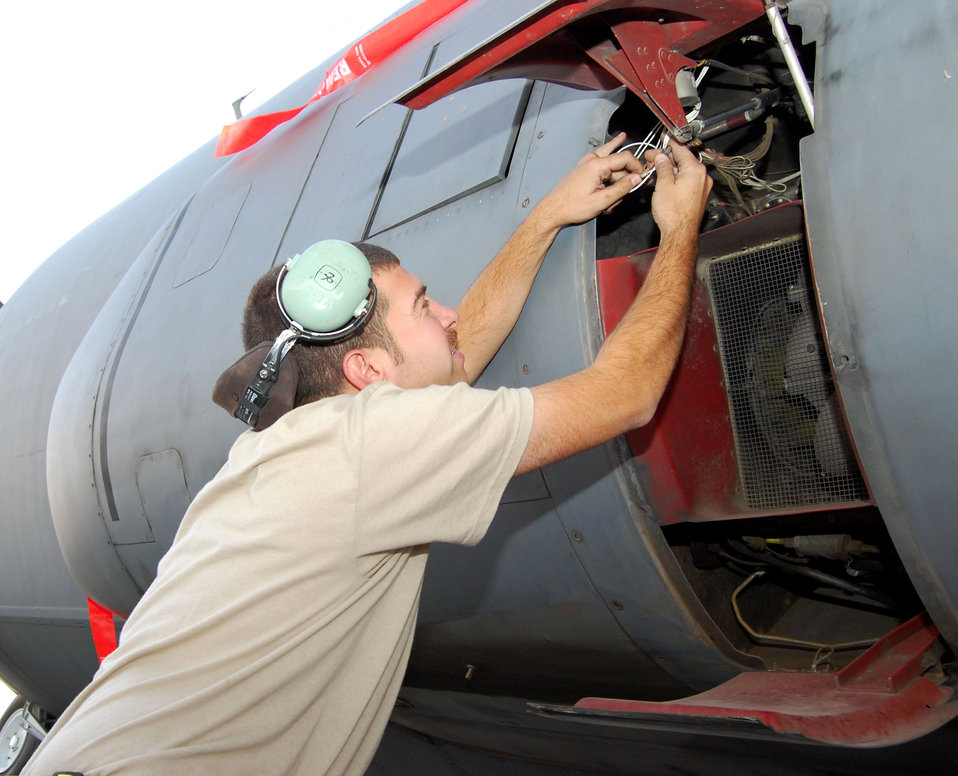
Aging C-130s: the geriatric fleet

Tech. Sgt. James Vehlies inspects wires for possible chaffing Oct. 30 in Southwest Asia. Some of the oldest C-130s in the Air Force fleet fly missions in support of operations Iraqi and Enduring Freedom. Sergeant Vehlies is an electro-environmental systems craftsman with the 43rd Expeditionary Electronic Combat Squadron.